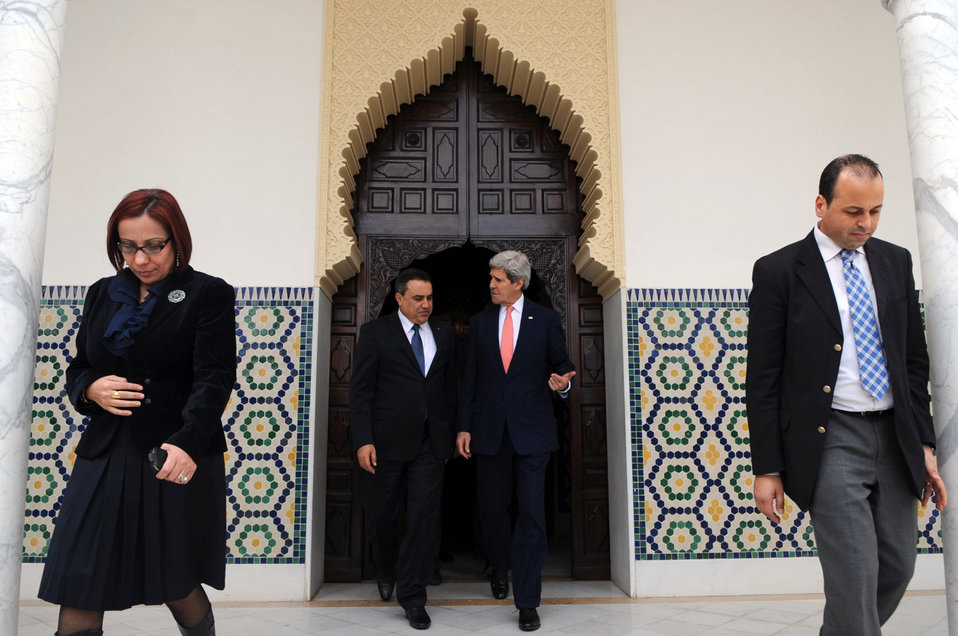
Tunisian Prime Minister Joma'a Escorts Secretary Kerry After Meeting

Tunisian Prime Minister Mehdi Joma'a escorts U.S. Secretary of State John Kerry as they leave the Dar Diafa Palace in Carthage after a bilateral meeting on February 18, 2014.